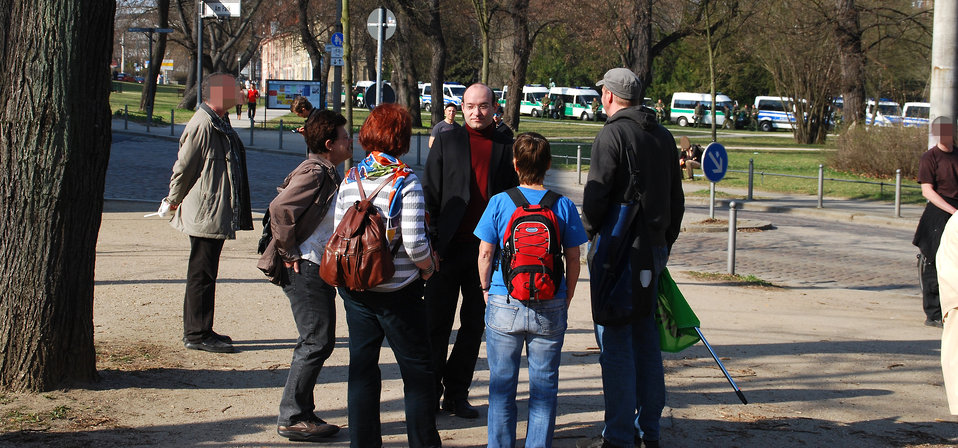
Proteste gegen den Nazi-Aufmarsch am 24.3.2012 in Frankfurt (Oder)